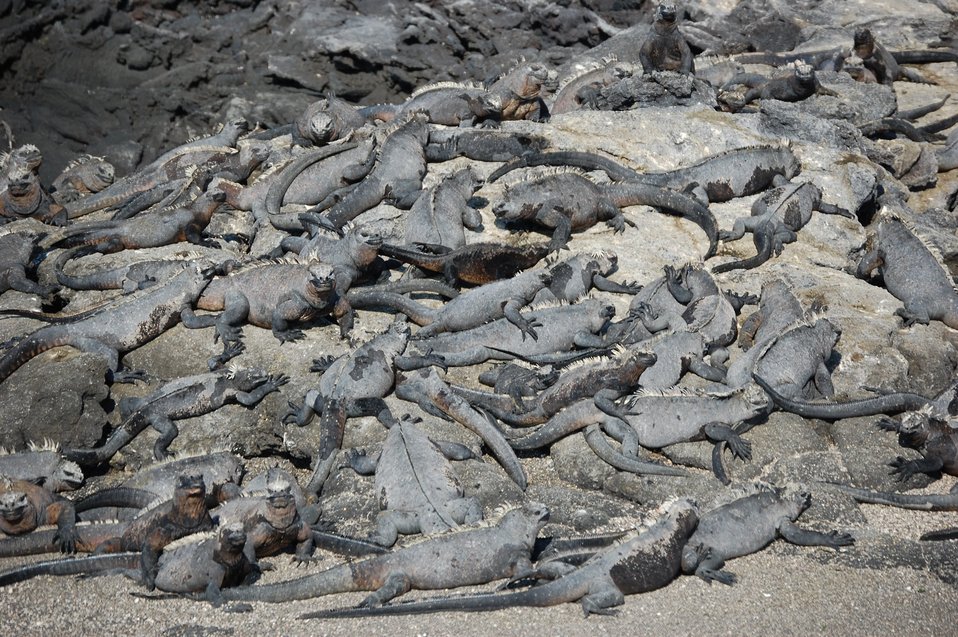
Gregarious marine iguanas holding a convention.